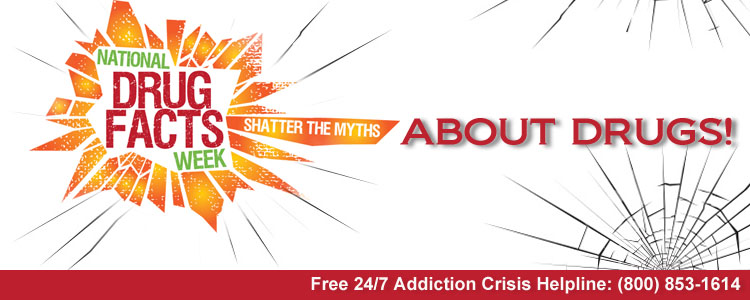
Watershed Blog FACTS-ABOUT-DRUGS-fb-banner

Palm Beach County, Fl. NDFW Events 2013